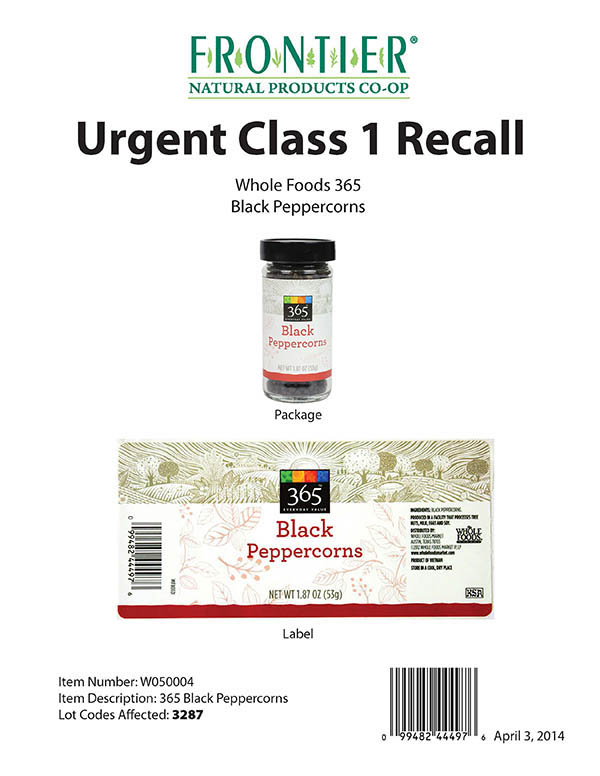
RECALLED – Organic Black Peppercorns

April 4, 2014 – Product Recall – Frontier Natural Products Co-op Initiates Voluntary Class 1 Recall Due to Possible Health Risk from Organic Black Peppercorns.